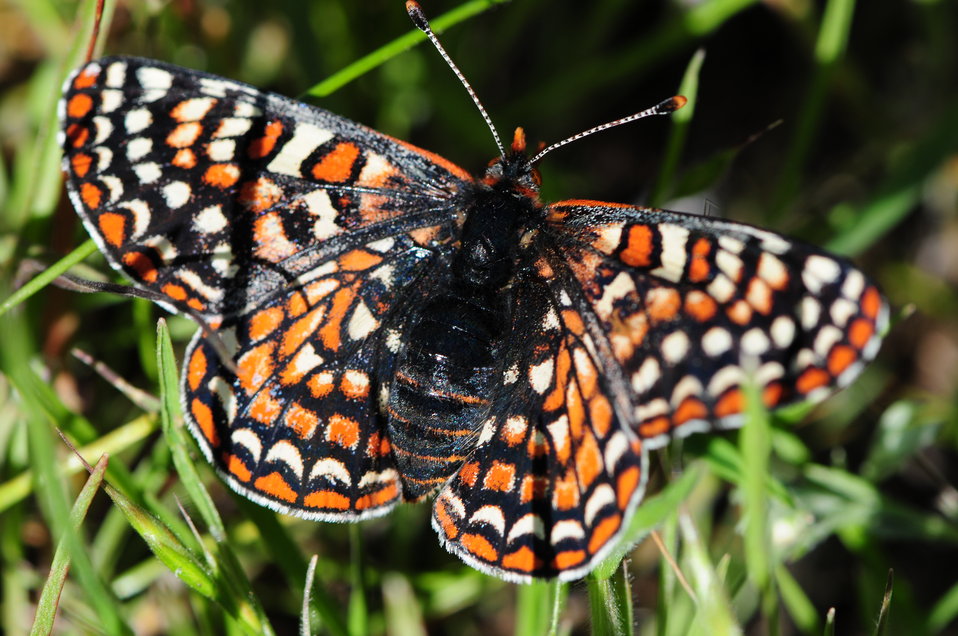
Bay checkerspot butterfly